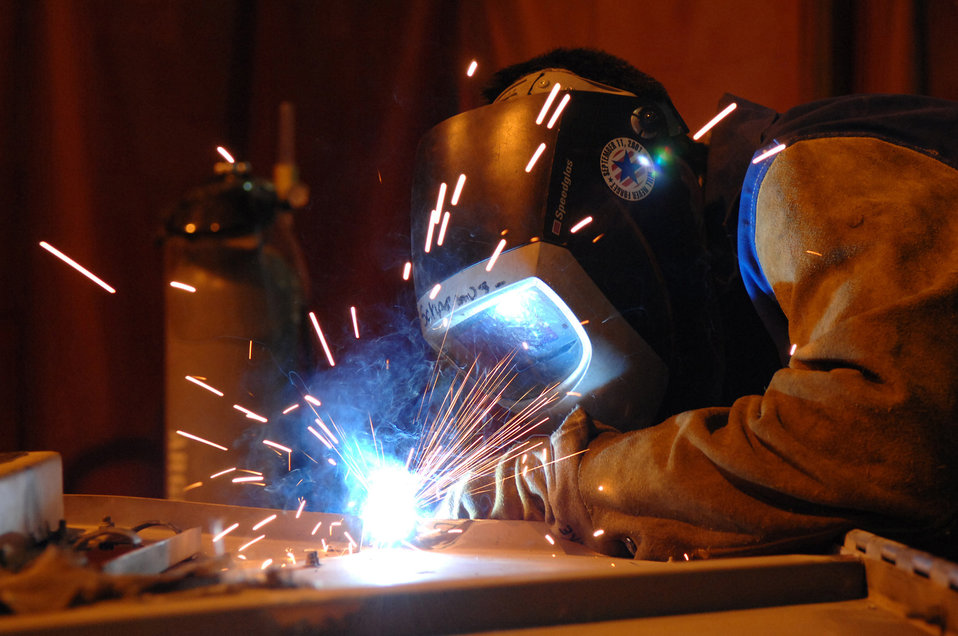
A job weld done

Staff Sgt. Jacob Schargus welds an air compressor unit door with a gas metal arc weld Jan. 27 at Balad Air Base, Iraq. The door had a series of cracks along the rim, and instead of ordering a new door, a machinist can fix it and have it back in working order within a day.